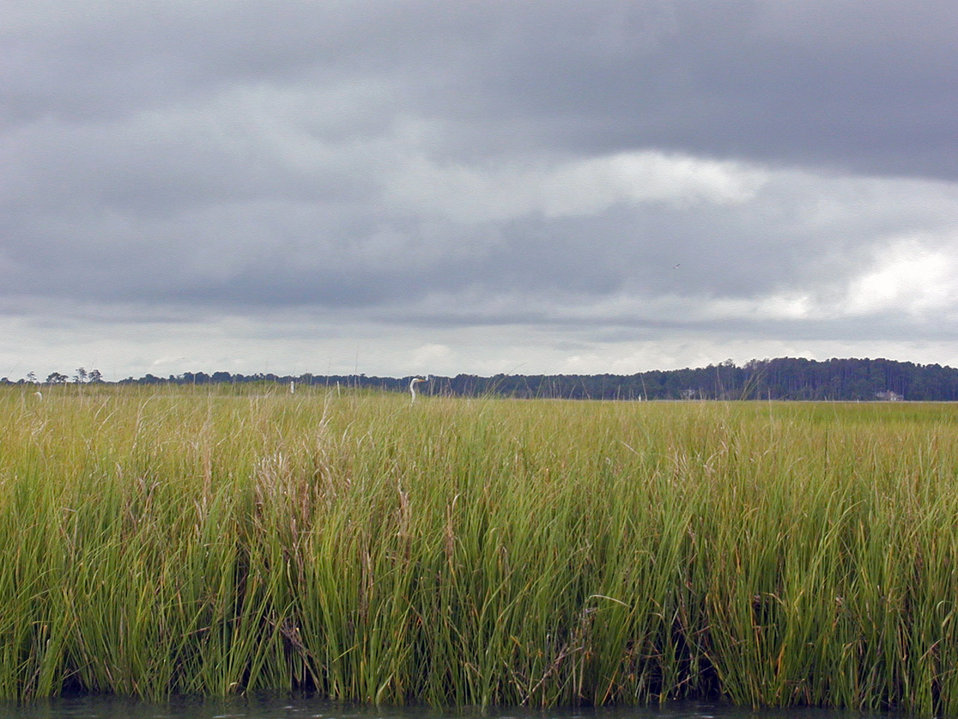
Marsh

Plum Tree Island National Wildlife Refuge, VA.